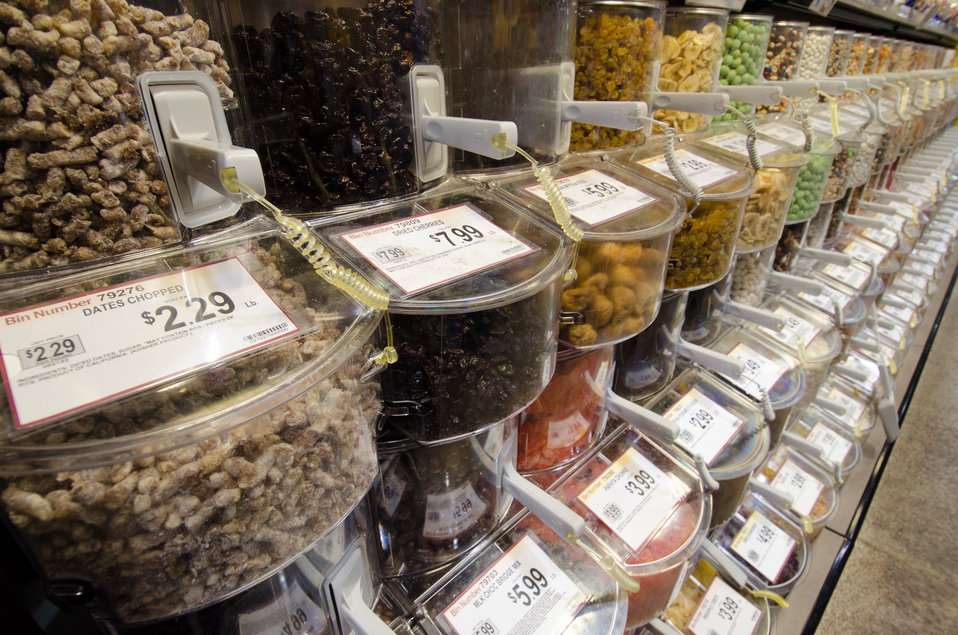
Nuts and dried produce, in self-serve bins, at a grocery store in Fairfax, Virginia, on March 3, 2011.